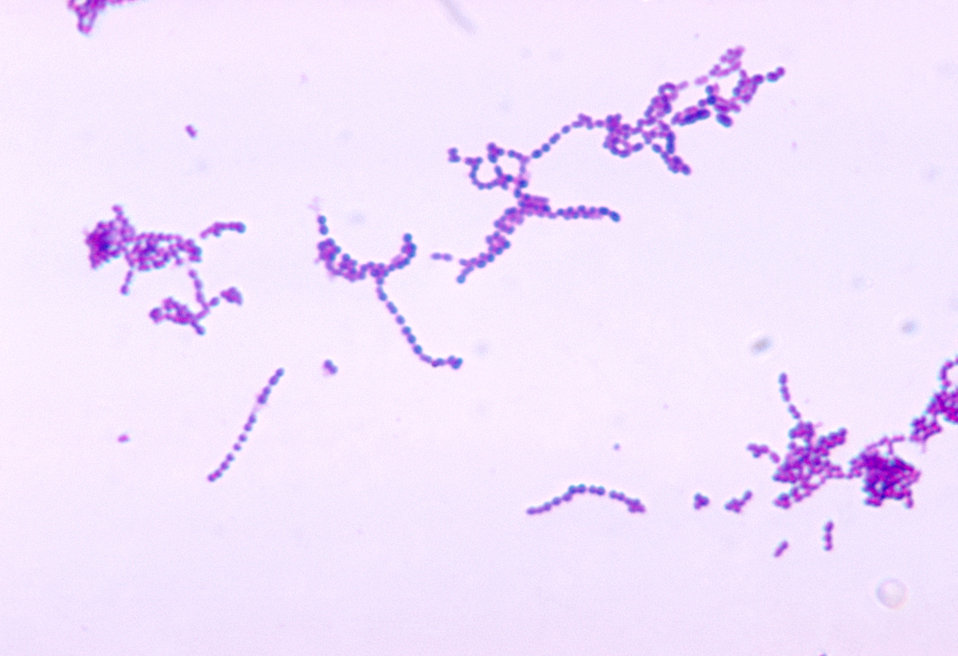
A photomicrograph of Streptococcus spp. bacteria using Gram stain technique.